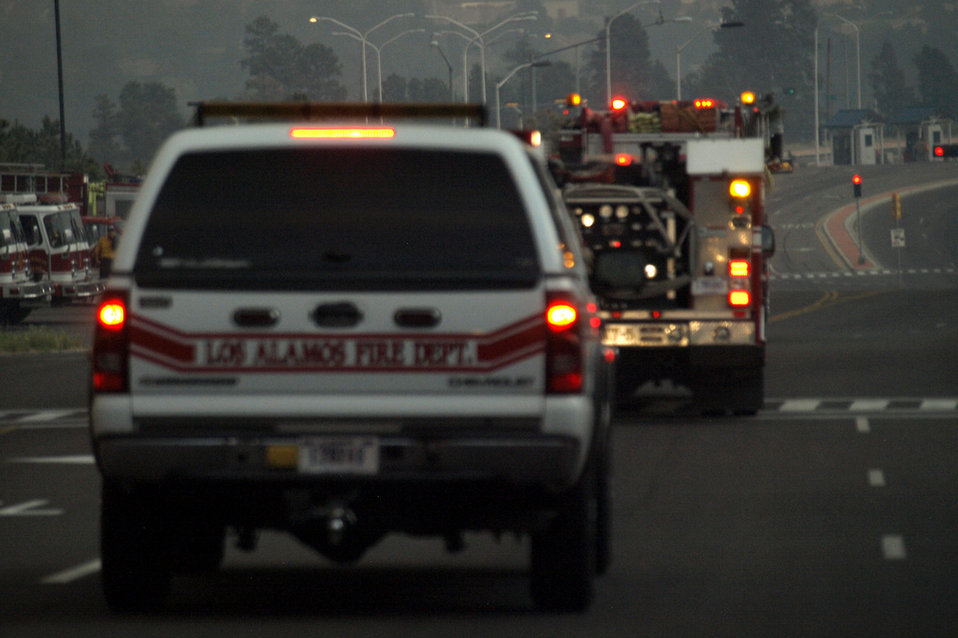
Emergency vehicles assemble at and disperse from Los Alamos Fire Station adjacent to Los Alamos National Laboratory on West Jemez Road.

The Las Conchas Fire started on June 26, 2011, it was caused by a fallen tree that caught fire after it came in contact with power lines nearby. The fire had burned over 121,000 acres, including 63 residences. At no time were hazardous materials in danger at Los Alamos National Laboratory. The lab was closed for a week and reopened on July 6th.